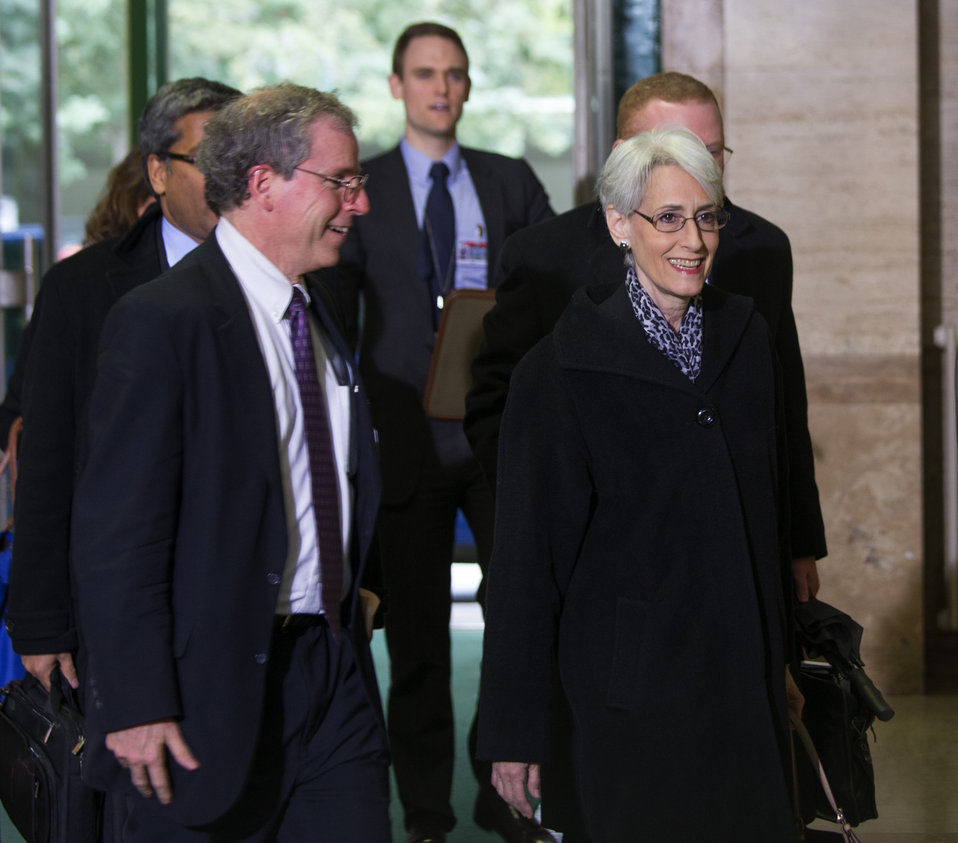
Under Secretary Sherman Arrives at UN for Meeting on Syria

Under Secretary of State for Political Affairs Wendy Sherman arrives at the United Nations to participate in a trilateral meeting with Joint Special Representative Brahimi and Russian Deputy Minister of Foreign Affairs Gatilov in Geneva, Switzerland on February 13, 2014. [U.S. Mission Geneva / Eric Bridiers]